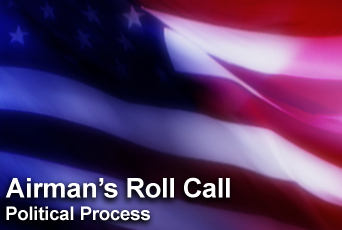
Airman's Roll Call: Participation in the political process

This week's Airman's Roll Call focuses on Airmen participating in the nation's political process.